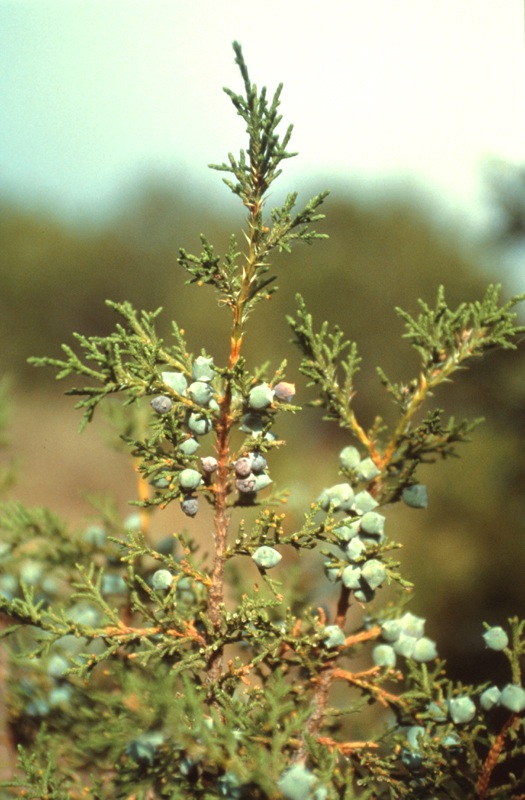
South Fork of the Snake River